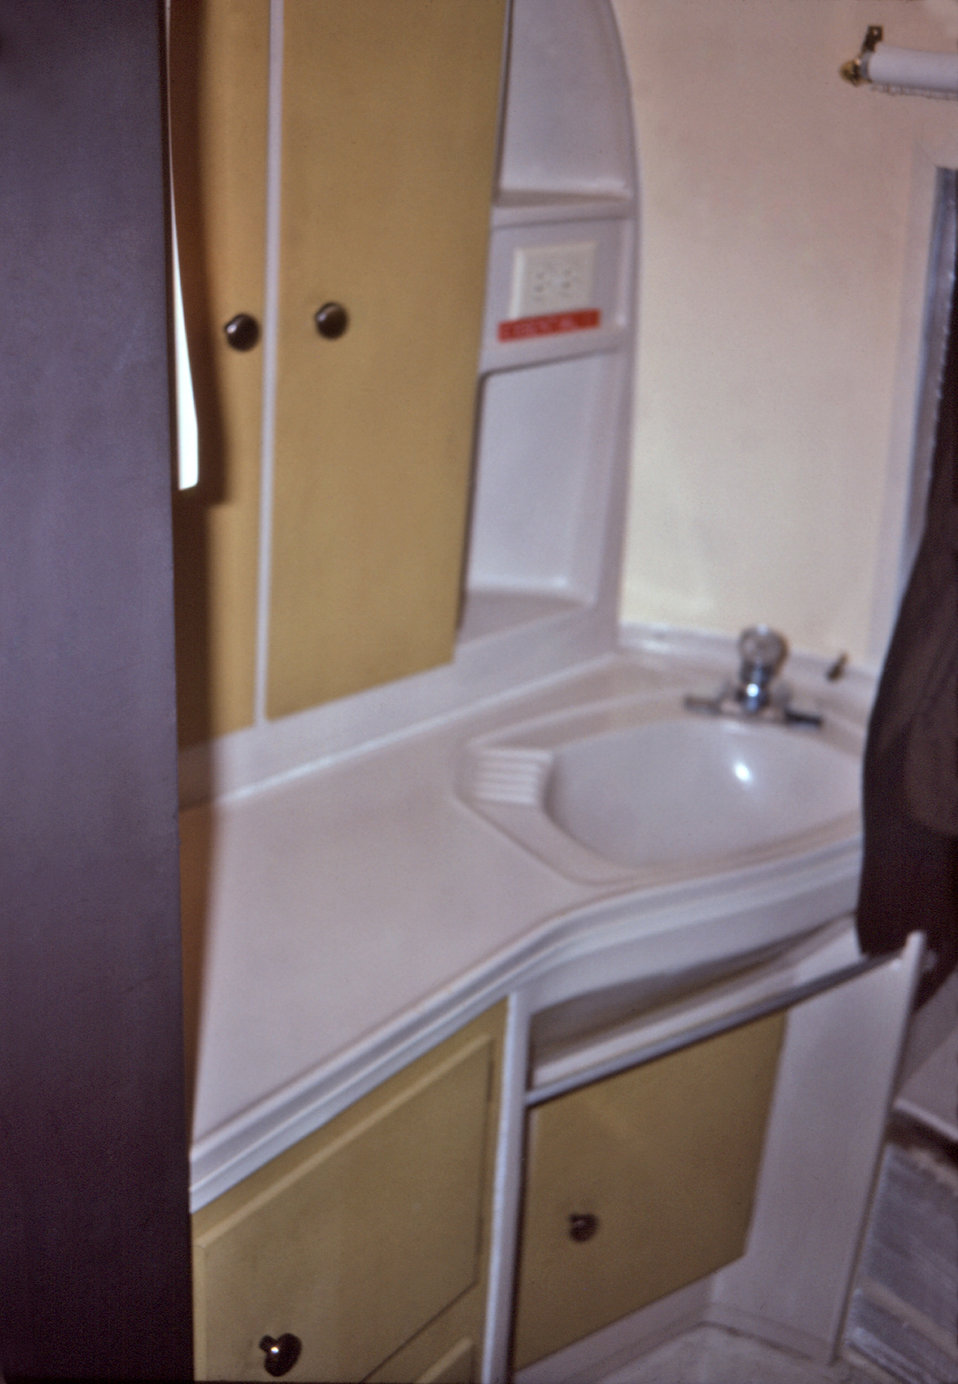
Shown here was the bathroom sink located within a mobile quarantine facility (MQF), which was photographed during a 1976 simulated medical quarantine exercise.